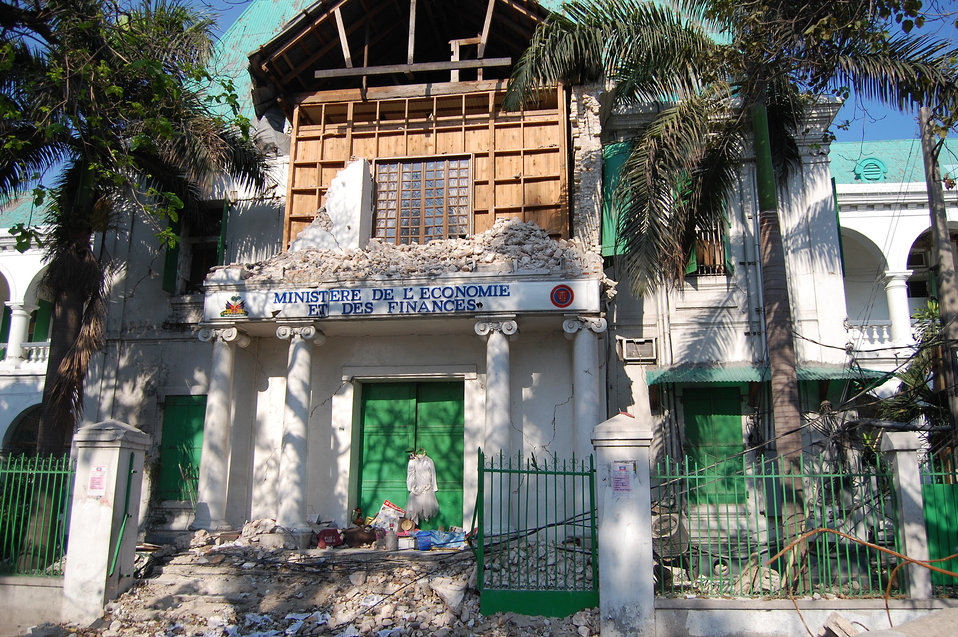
Haiti, One Year Later

Building damage at the Haitian Finance Ministry.